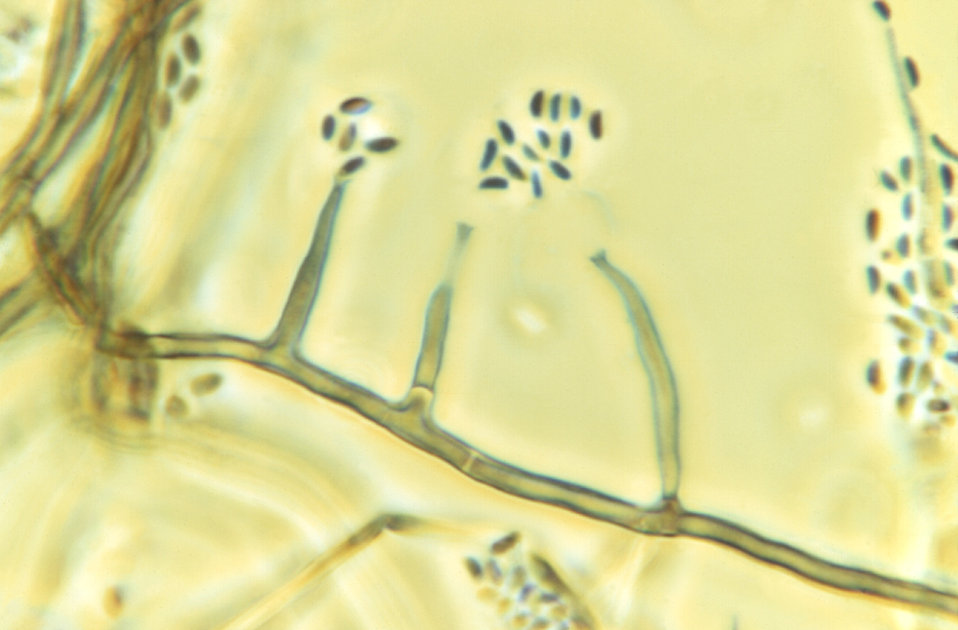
Magnified 1125X, this photomicrograph revealed morphologic details displayed by the fungal organism, Phialophora parasitica. A darkly-pigmented, filamentous fungus, which is known to be a cause of chromoblastomycosis and phaeohyphomycosis which affect the subcutaneous tissues, however, in the case of phaeohyphomycosis, many organ systems may be affected, even becoming disseminated throughout the body.